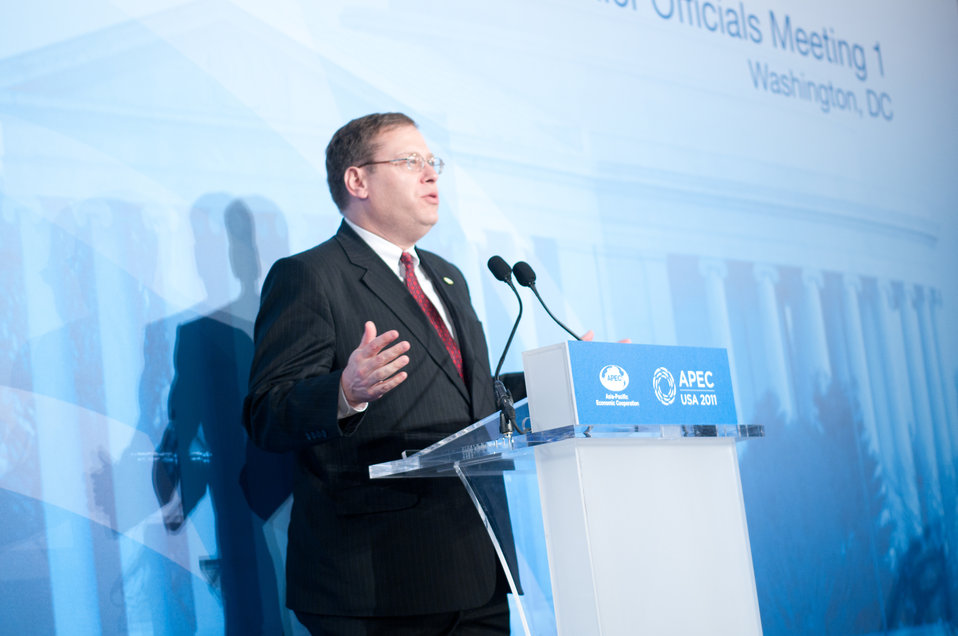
Senior Official Tong Welcomes Delegates

U.S. Senior Official Kurt Tong welcomes delegates to the First Senior Officials Meeting (SOM1) and Related Meetings at the Ronald Reagan Building in Washington, D.C., on March 9, 2011. [Fredde Lieberman photo]